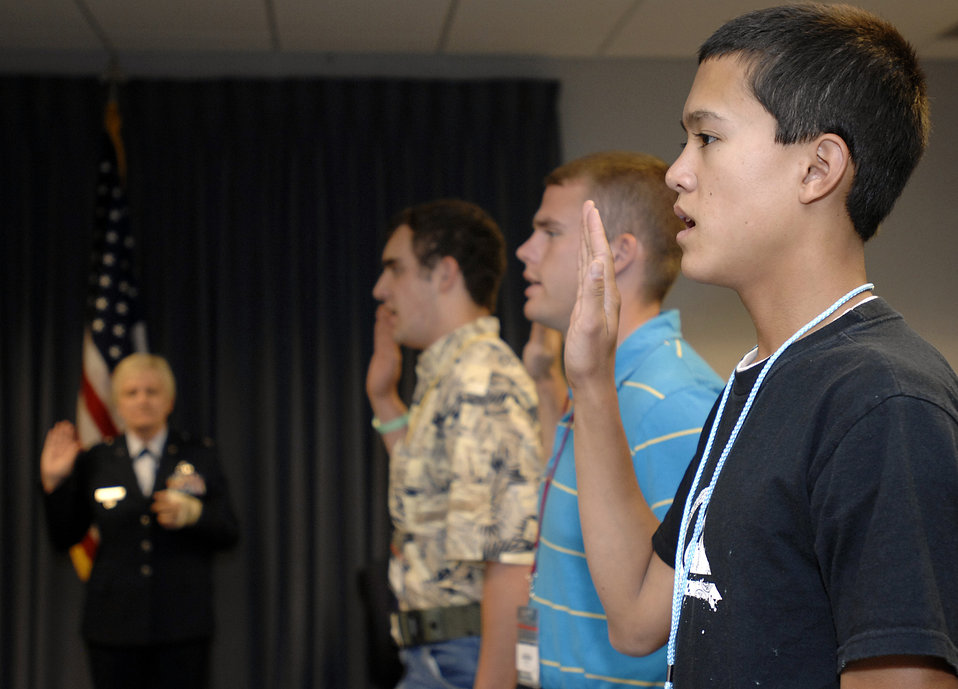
Class of 2012 Arrives

Basic Cadet Tate Montgomery recites the Oath of Allegiance paperwork during inprocessing June 26 at the U.S. Air Force Academy, Colo. Inprocesing marks the start of 38 days of Basic Cadet Training, which is designed to prepare basic cadet trainees for entry into the cadet wing.